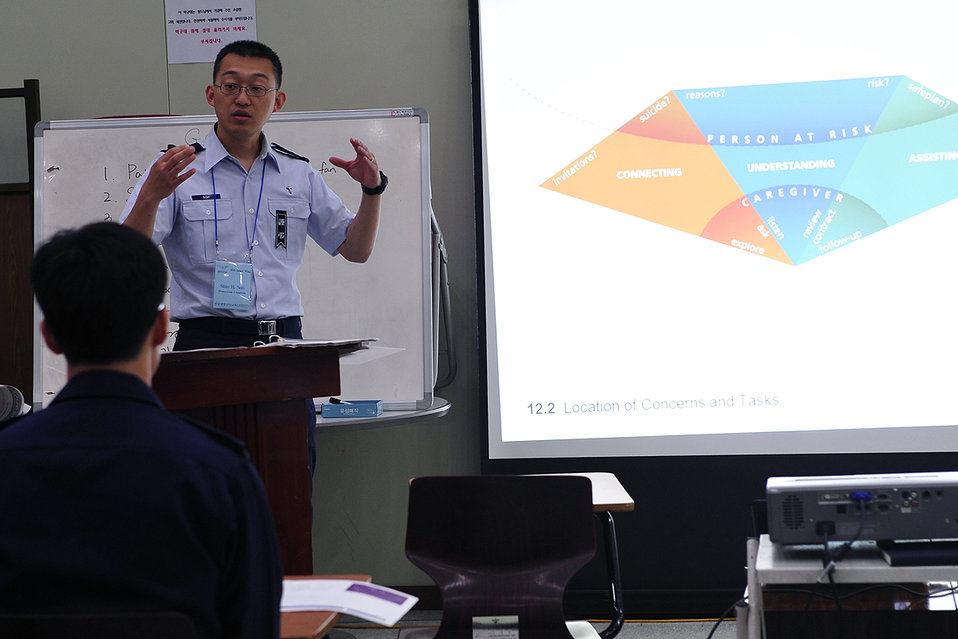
ASIST

Chaplain (Capt.) Shin Soh speaks to a group of South Korean air force chaplains April 27, 2010, during Applied Suicide Intervention Skills Training at Osan Air Base, South Korea. Chaplain Soh is from Vandenberg Air Force Base, Calif.